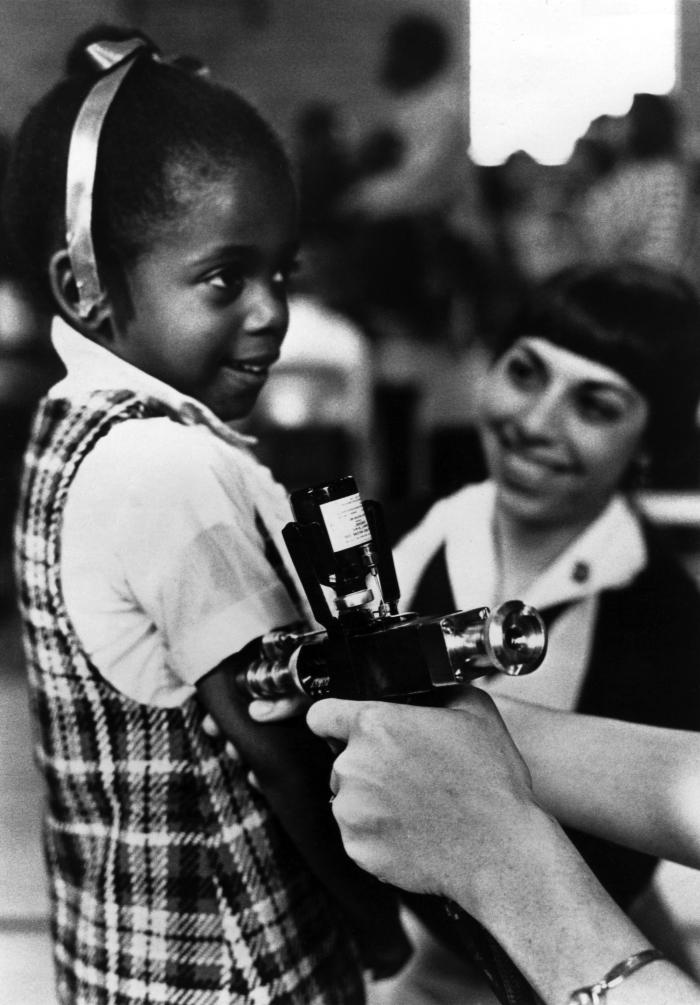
This photograph, used in a public health awareness campaign in the 1980s, shows a female child receiving a vaccination delivered by a jet injector.